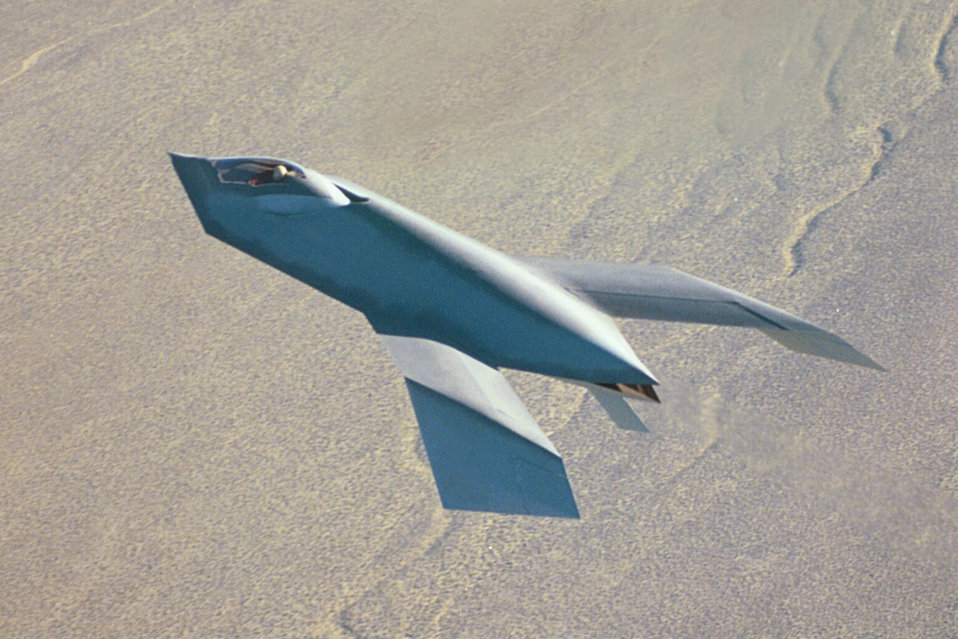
Bird of prey

FILE PHOTO -- The Bird of Prey served as a highly classified project from 1992 to 1999 before Boeing Co. officials unveiled it Oct. 18. It will become part of the Air Force Museum in Dayton, Ohio, on July 16.